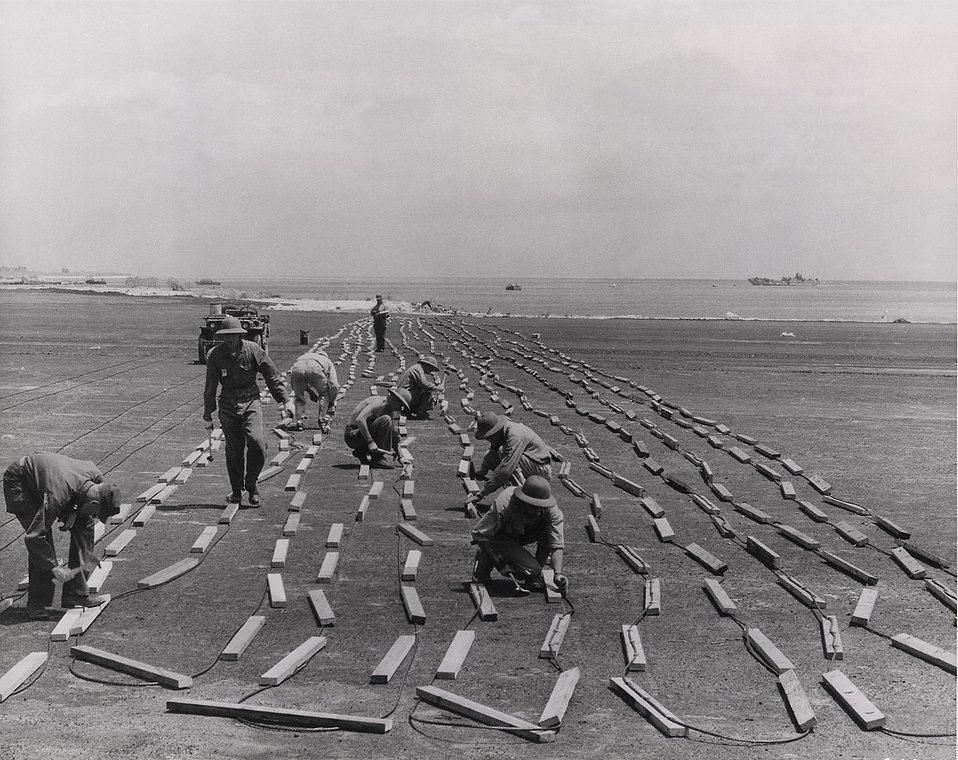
A crew of men prepare a water sample cable with flotation blocks, before the bomb tests are made at Eniwetok.